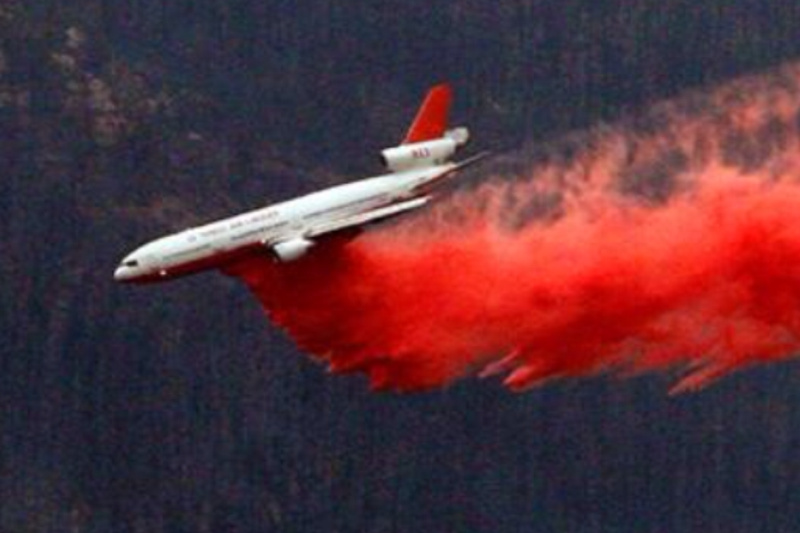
Air tanker drops retardant on the Aspen Fire on Tuesday, Jul. 30, 2013. The Aspen Fire in the Sierra National Forest near Big Creek, CA began on Jul. 22, 2013 by lightning and has consumed approximately 16, 204 acres and is approximately 40% contained.